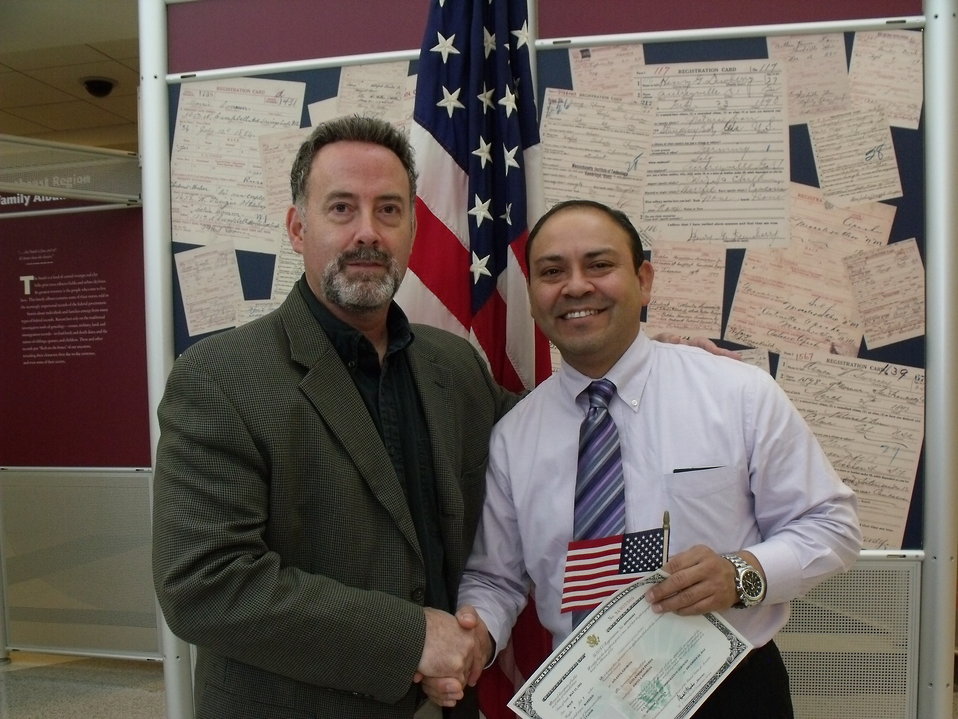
New Citizens